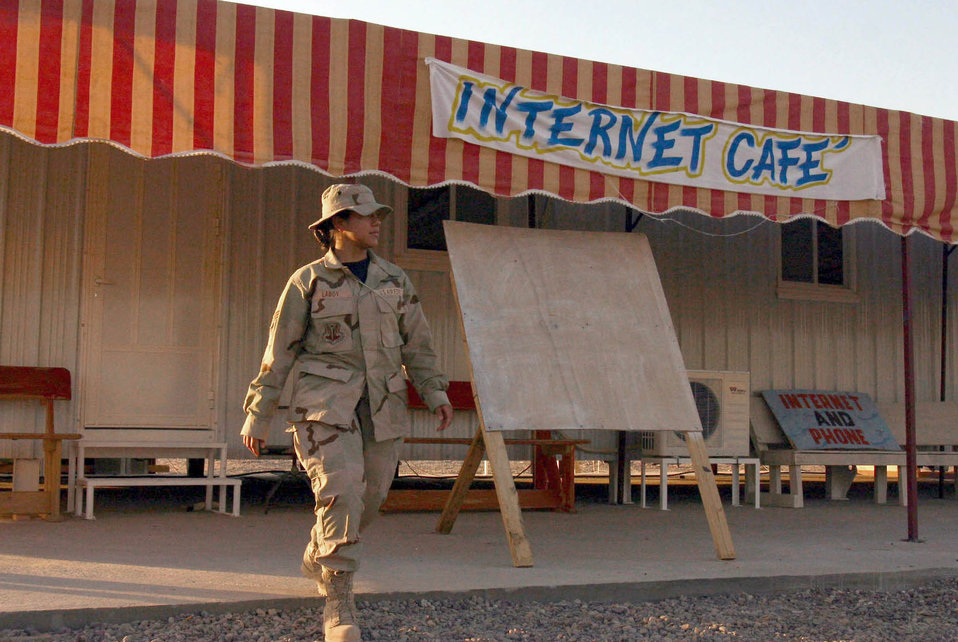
Air Force communications vital to Army effort in Iraq

BAGHDAD, Iraq -- Airman 1st Class Vanessa Laboy finishes using an Internet caf√© in the 1st Cavalry area of Camp Victory here. Air Force communications teams are helping support one of more than 180 Internet cafes throughout Iraq.